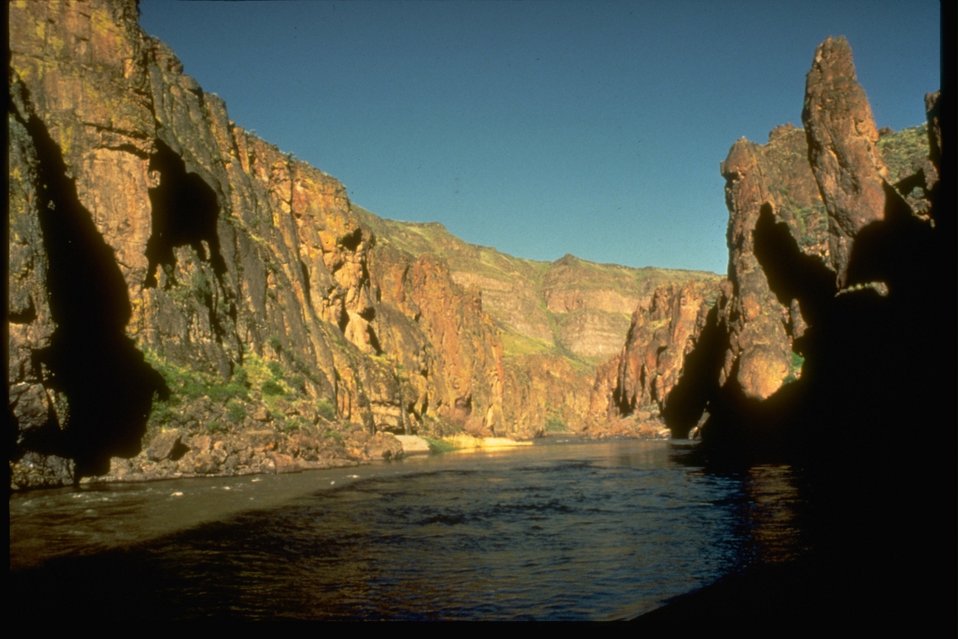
Owyhee River